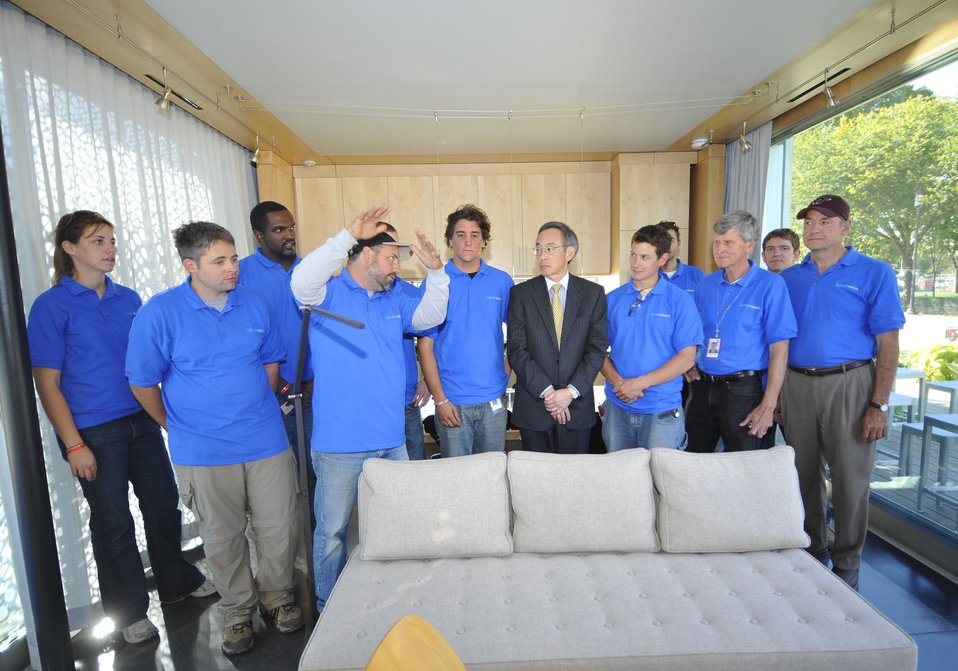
Solar Decathlon 2009 on the National Mall, with Sec. Chu

Solar Decathlon 09